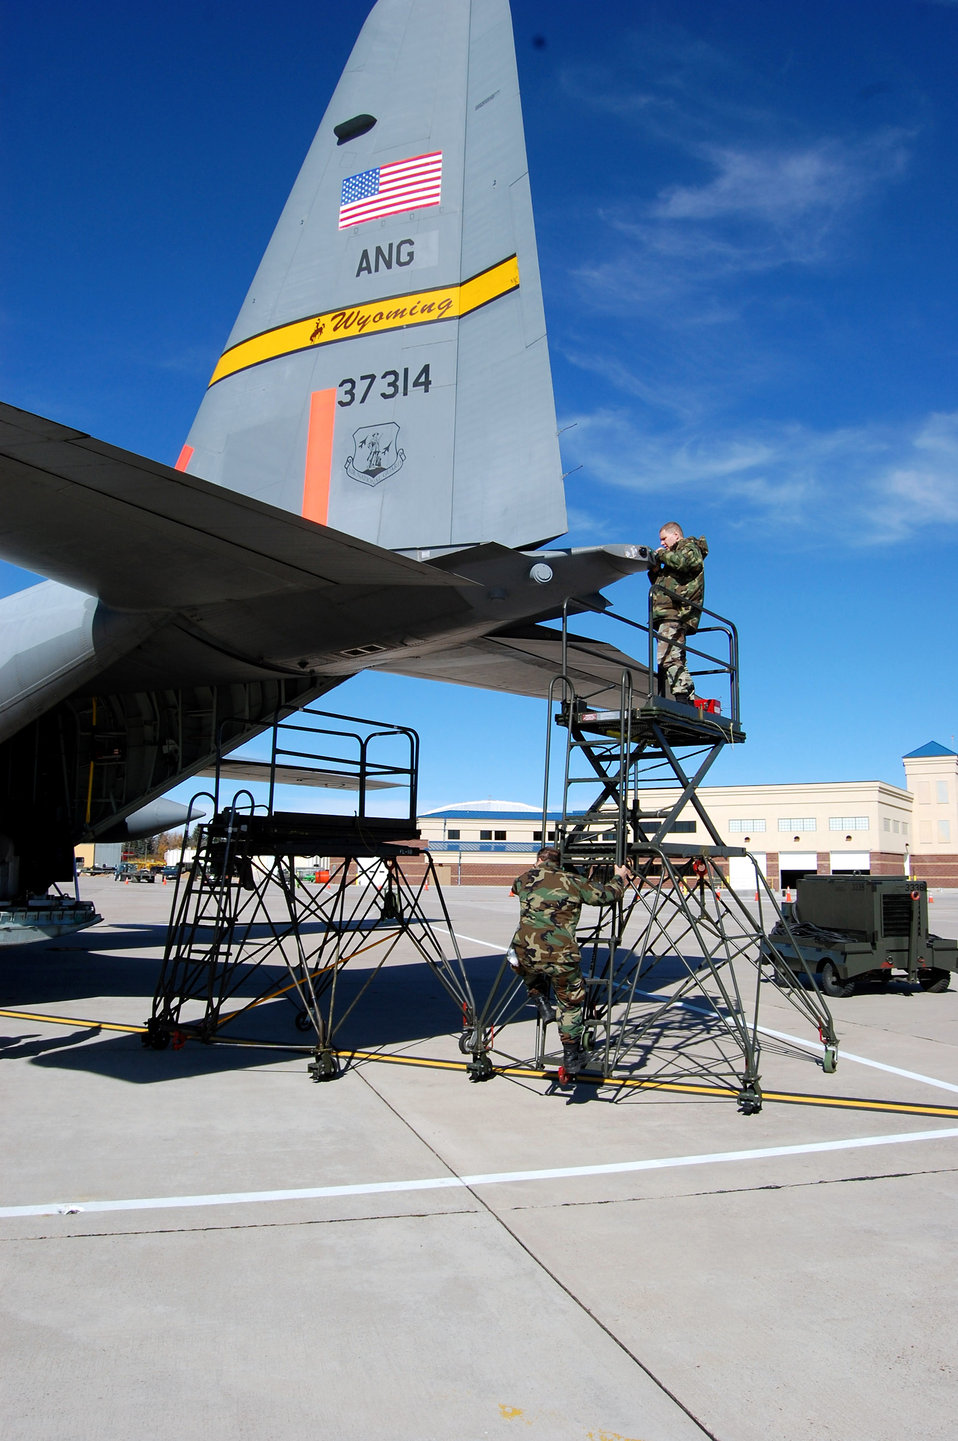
Herculean support for California fires

Wyoming Air National Guard maintainers prepare a C-130 Hercules for firefighting missions Oct. 23 in Cheyenne, Wyo. Fires have ravaged Southern California forcing more than 500,000 people from their homes as the president has declared a federal emergency for seven counties in the state. The orange number on the tail identifies the plane as one of the units using the Modular Airborne Fire Fighting System to battle the blaze.